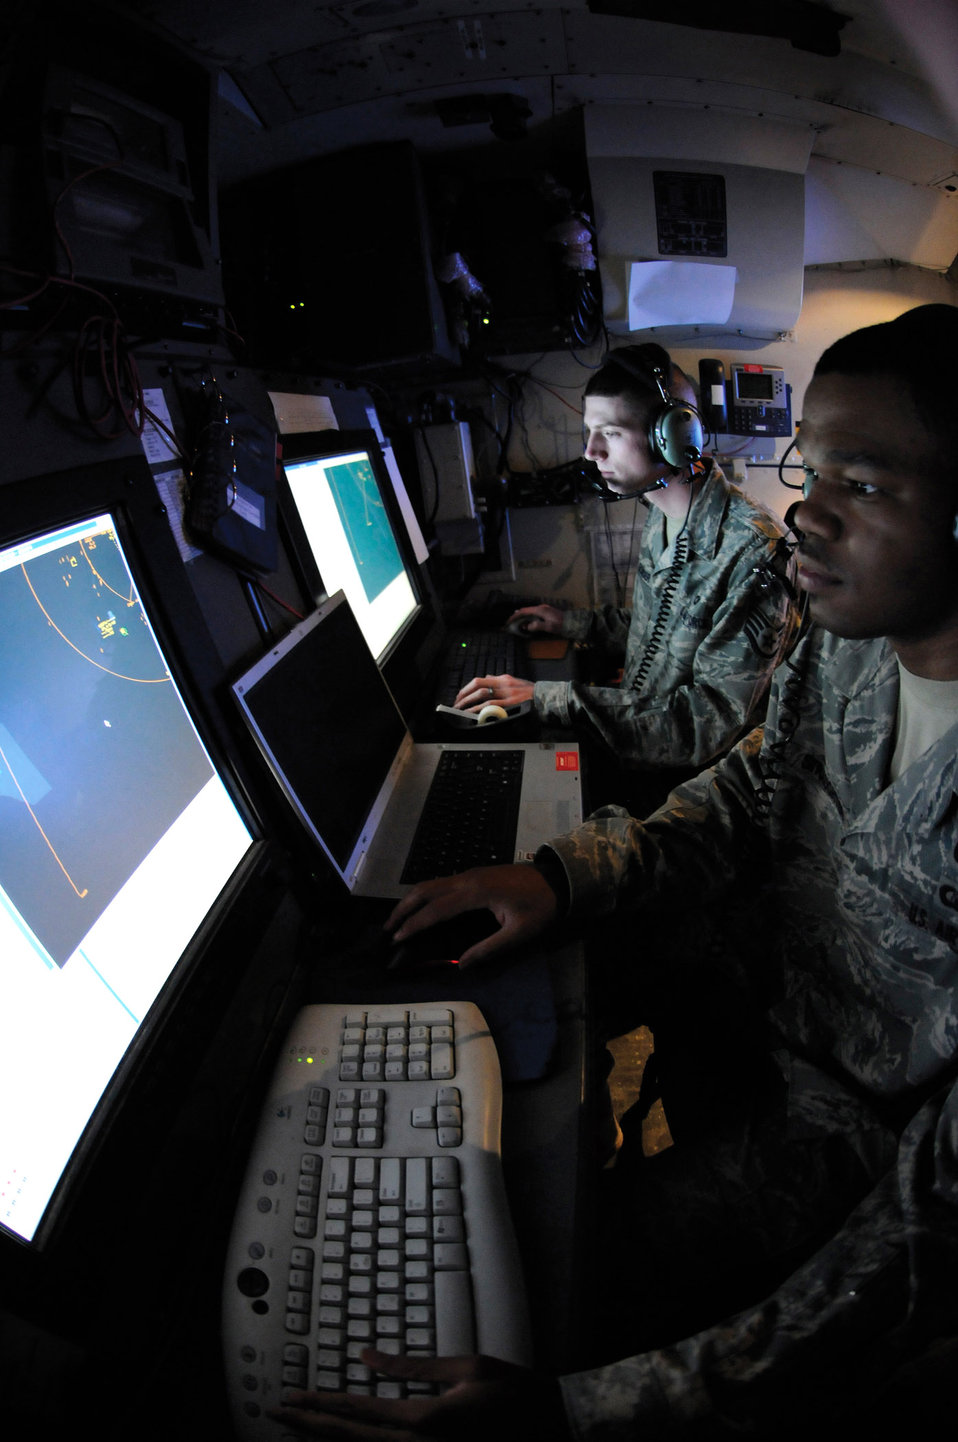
Airmen keep eyes on the sky to protect warfighters

Staff Sgt. Odell Straughter III and Staff Sgt. Randy Bowser set up and maintain a tactical data link Dec. 30, 2008, in Southwest Asia. Sergeant Straughter III is a weapons director assigned to the 71st Expeditionary Air Control Squadron. He hails from St. Louis. Sergeant Bowser is an interface control technician assigned to the 71st EACS. He is a native of New Britian, Conn.